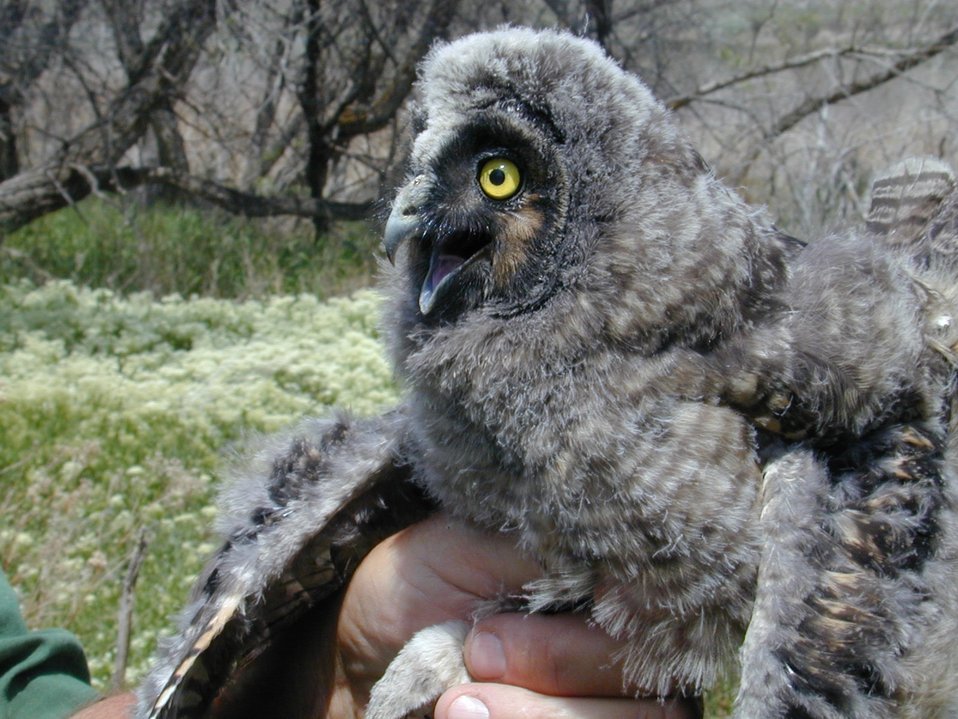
Environmental Education Fire Workshop Timberline High School Fall 2000